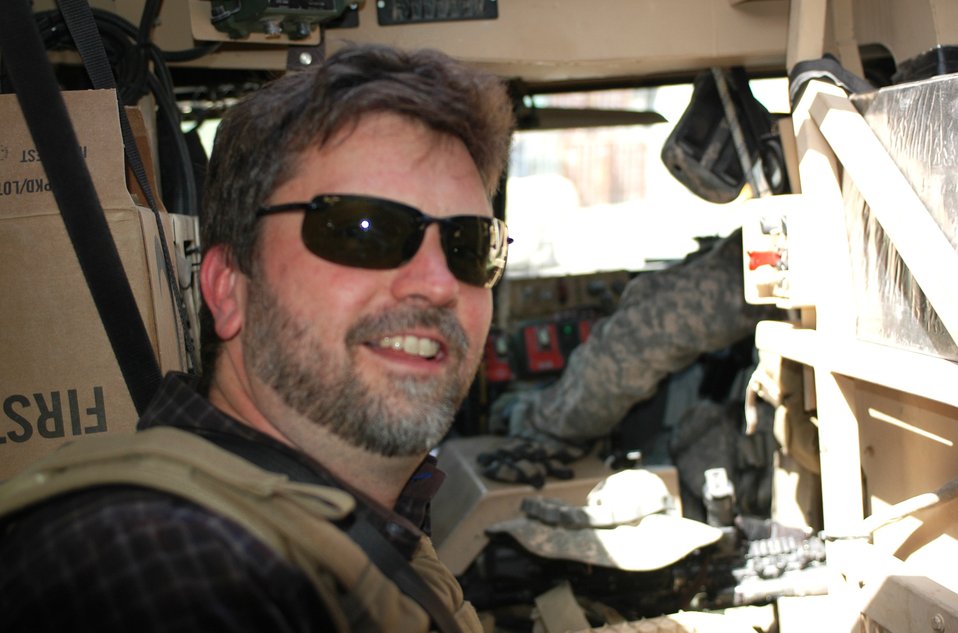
Dr Shah Visits Argandab April 10, 2010